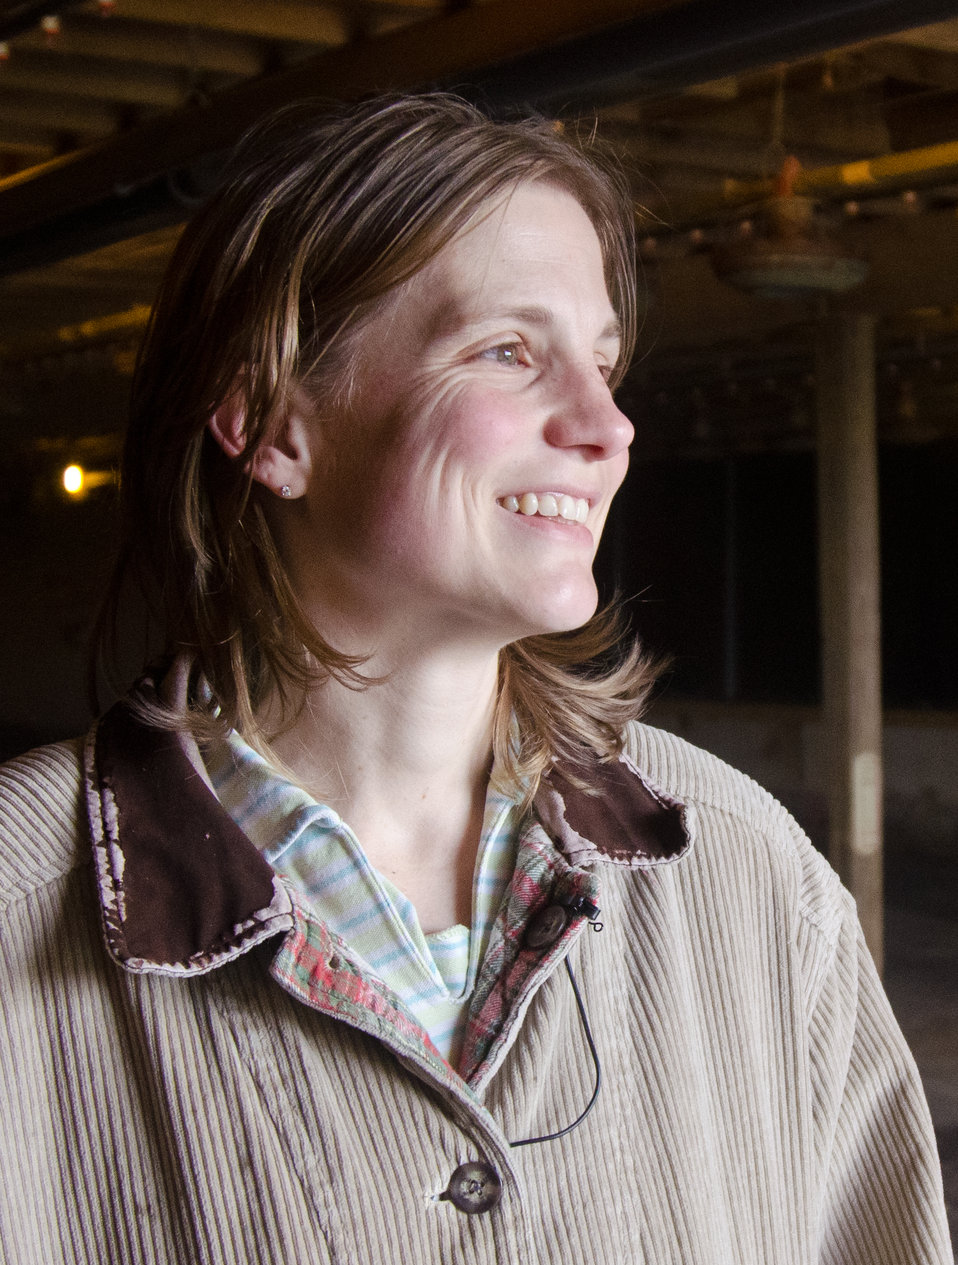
Roxanne Molnar and her husband Mathew have an 80,000 chicken farm in Grantville, PA, and were recipients of a $20,000 Rural Energy for America Program (REAP) grant. Her oversized coat and wind blown hair are standard for this American poultry farmer, wife and mother of two boys, on Thursday, April 21, 2011. The grant money is a portion of the cost it took the Molnar’s to modernize the second of two 40,000 chicken capacity chicken houses. Chickens need to be kept at a comfortable temperature to remain productive. New radiant heaters keep the chickens warm during Pennsylvania winters. On warm days, ceiling vents provide passive venting of heat out of the building; when chicken house temperatures are estimated to be above 90 degrees, fans come on, pulling air through water evaporator elements lowering air temperature down 10-15 degrees and flows along the chicken house's length, in effect a tunnel of cooled air. The benefits to the chickens are heat and excess moisture removal; minimized dust and odor; limits buildup of ammonia and carbon dioxide; and provides oxygen for respiration. All these systems are computer controlled allowing owner, Roxanne Molnar to run the farm by herself and raise two small boys Gavin (2) and Grant (5). Husband, Matthew works off the farm and frequently travels, so along with the demands of parenting and manually controlling fans, vents, and having to remove the 80,000 chickens from their feeders and moving them around to cool them was an increasingly daunting task. The computer controls of the new system automate many of the daylong tasks allowing the Molnar’s to run their family farm. USDA Photography by Lance Cheung.